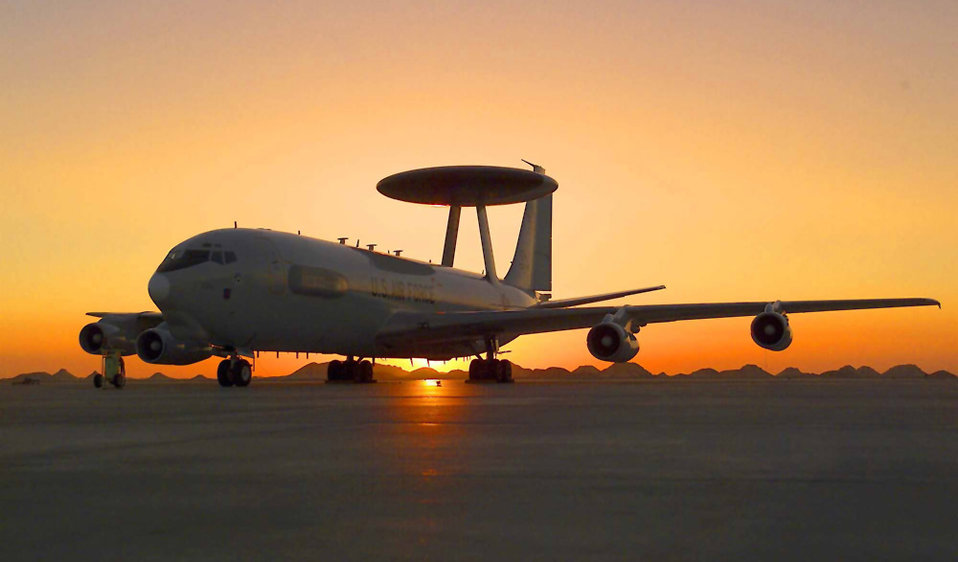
Sun sets on AWACS mission

FILE PHOTO -- An E-3 Sentry Airborne Warning and Control System sits on the flightline at a forward-deployed location in Southwest Asia. The AWACS mission conducted by the 363rd Expeditionary Airborne Air Control Squadron ended May 28 after 13 years.